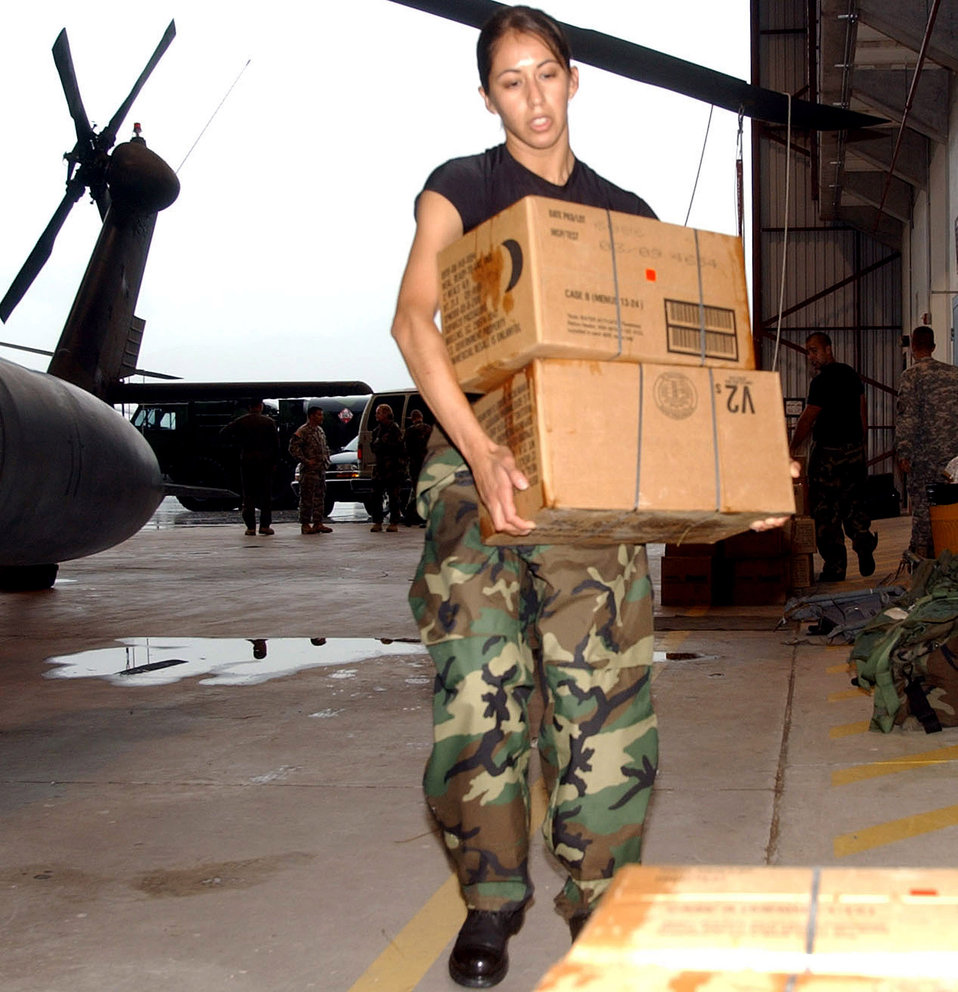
Assessment teams gear up in preparation for Felix

Capt. Kenya helps prepares supplies Sept. 4 to be loaded onto aircraft at Soto Cano Air Base, Honduras. Captain Colon is the Joint Task Force-Bravo J4 deputy director. The supplies will be used by assessment teams scheduled to deploy throughout Central America following Hurrican Felix. The assessment teams include multiple personnel who will evaluate the amount of assistance needed from U.S. forces including, search and rescue, medical, engineering and communications troops.